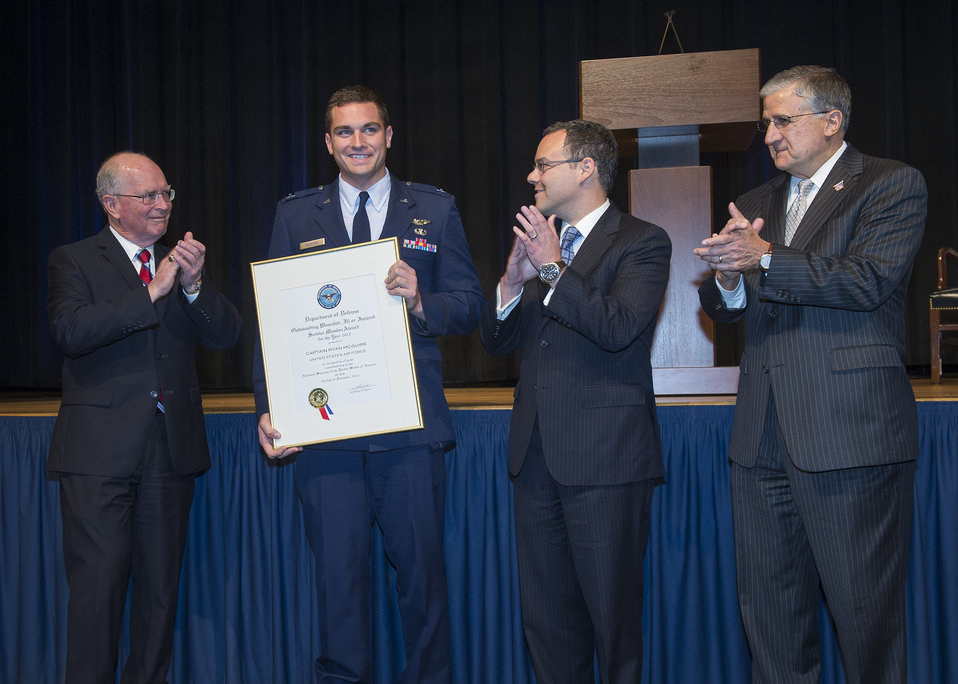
Outstanding, even with disabilities

Capt. Ryan McGuire, a C-17 Globemaster III pilot with the 4th Airlift Squadron at Joint Base Lewis-McChord, Wash., was one of two service members recognized as Outstanding Department of Defense Service Members with Disabilities for 2012, at the 32nd Annual Department of Defense Disability Awards Ceremony held in the Pentagon, Washington, D.C., on Dec. 04, 2012. The captain is pictured with, from left to right, Frederick E. Vollrath, performing the duties of assistant secretary of defense for readiness and force management; Daniel Ginsberg, the Air Force assistant secretary for Manpower and Reserve Affairs; and Bob Corsi, Air Force assistant deputy chief of staff for Manpower, Personnel and Services.